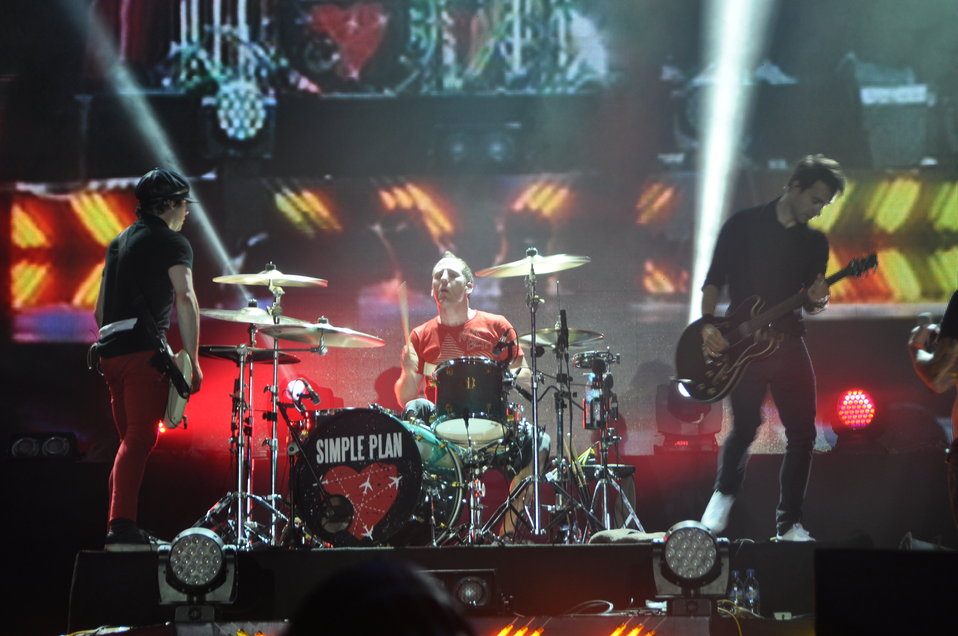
USAID co-sponors MTV EXIT concert in Hanoi against human trafficking

USAID co-sponsors MTV EXIT concert, campaign against human trafficking